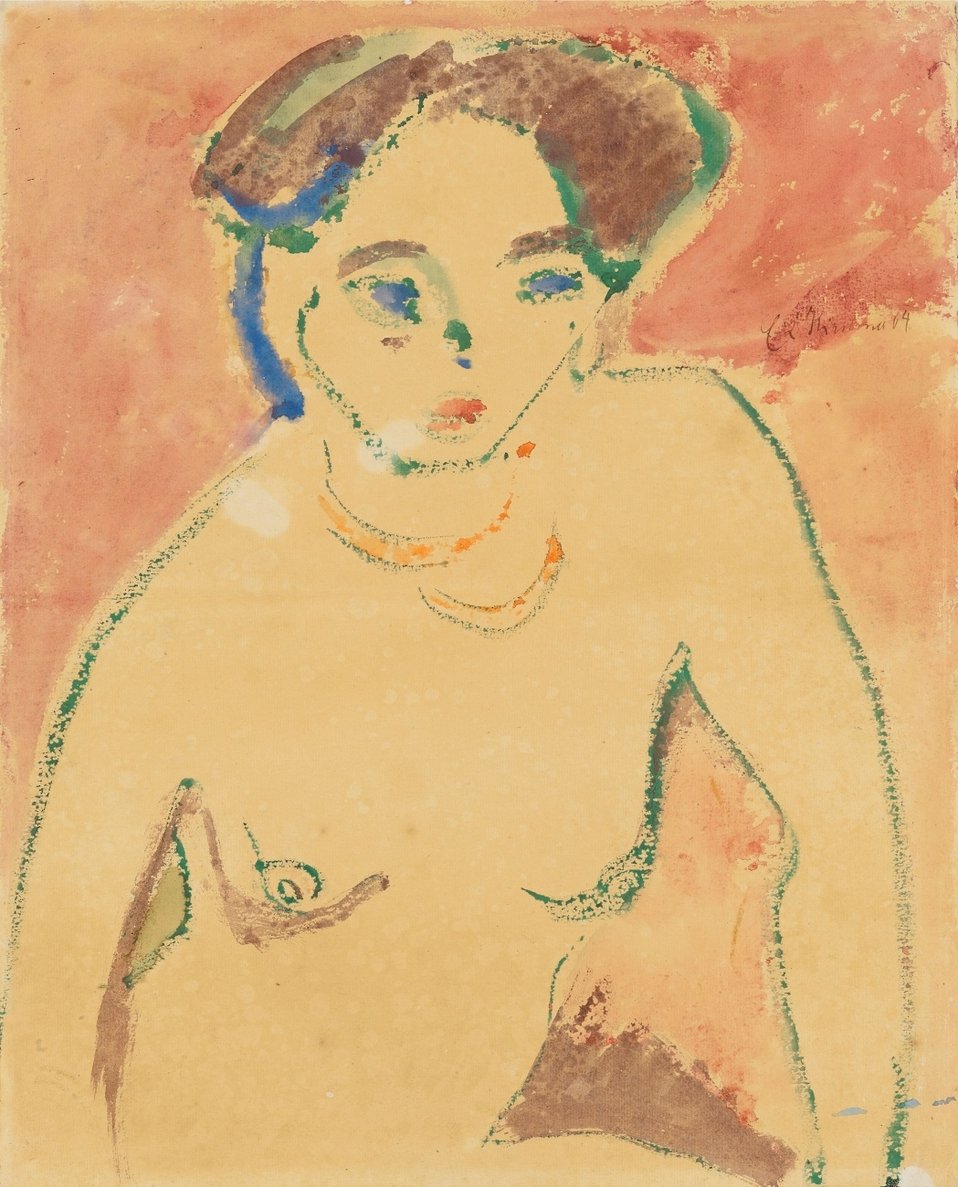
Halbakt eines jungen Mädchens (Mädchen-Halbakt). (Verso: Skizze eines auf den Knien liegenden weiblichen Aktes), Aquarell auf Aquarellkarton 43 x 34,7 cm